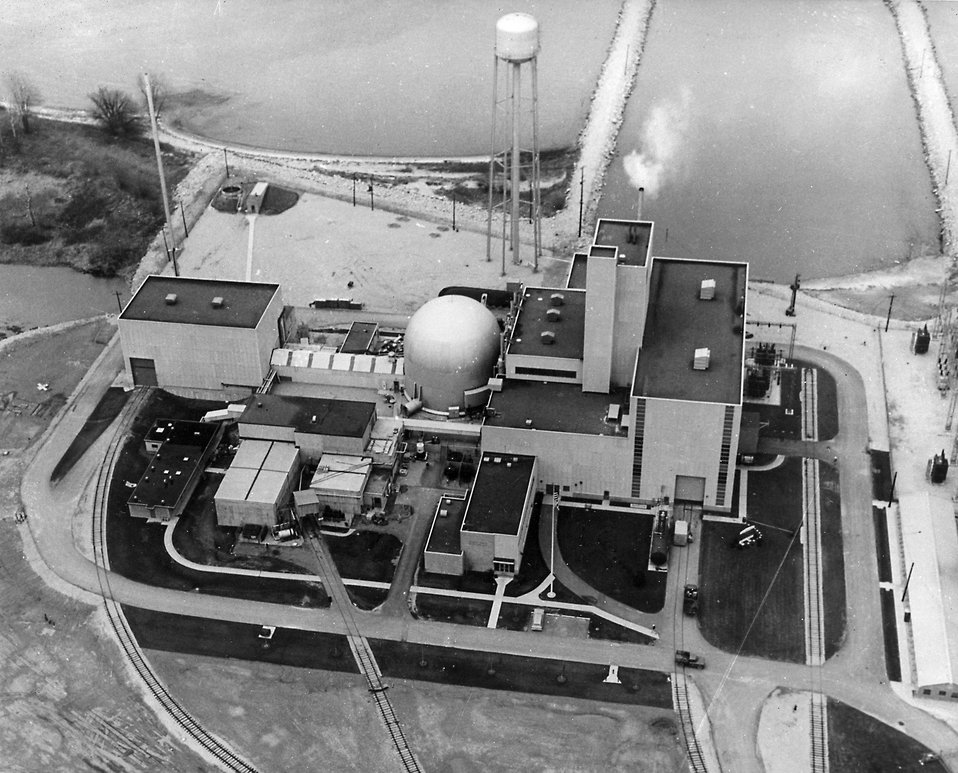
The Enrico Fermi Atomic Power Plant operated by the Power Reactor Development Company is a fast breeder reactor provided with a turbo-generator rated at 150,000 KW (e). Circa 1963.